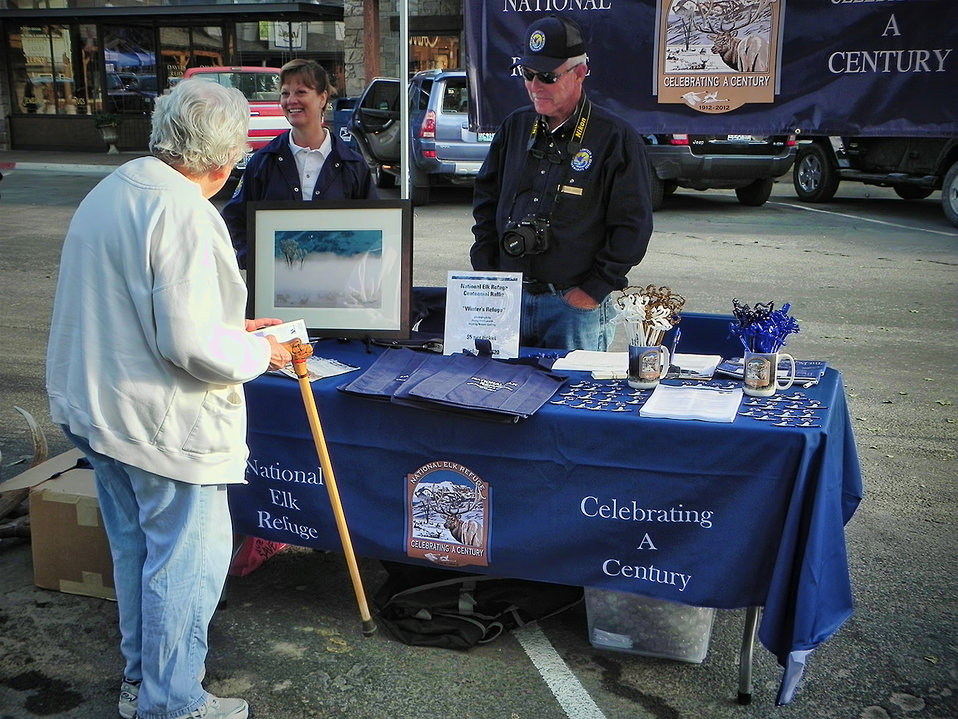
Centennial Booth at the Farmer's Market

National Elk Refuge volunteers Bobby and Cecilia Harkey staffed a booth on July 7 at the first Farmer's Market of the 2012 season in Jackson, Wyoming. The educational booth had both information and promotional items regarding the Refuge's centennial as well as an opportunity to win a framed photo of wintering elk taken by Henry Holdsworth of Wild by Nature Gallery in Jackson.

Credit: USFWS / BJ Baker, National Elk Refuge volunteer